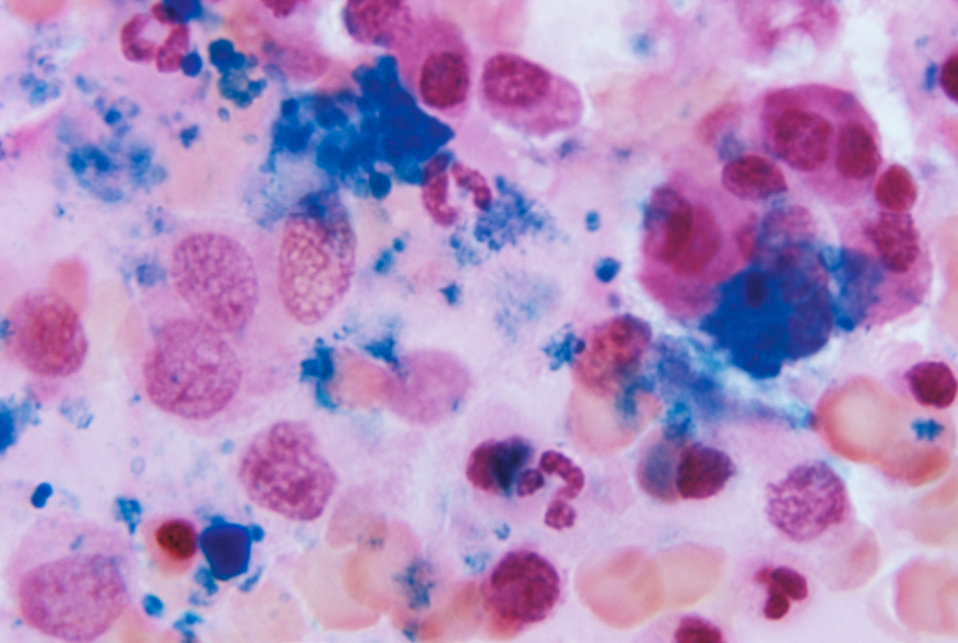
This photomicrograph of bone marrow tissue shows a normal amount of iron stores using Prussian blue stain.